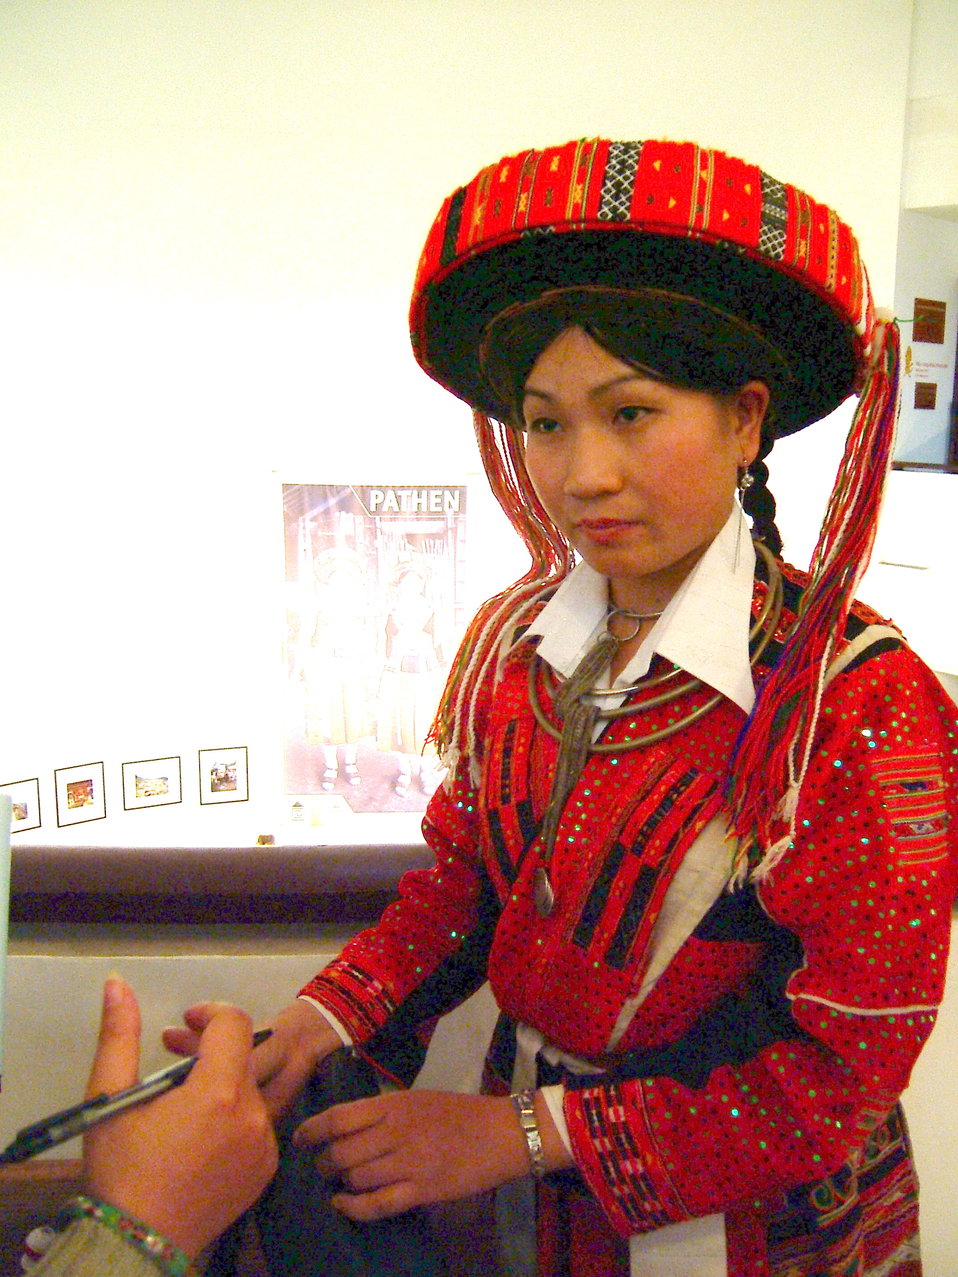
A Pà Thẻn lady